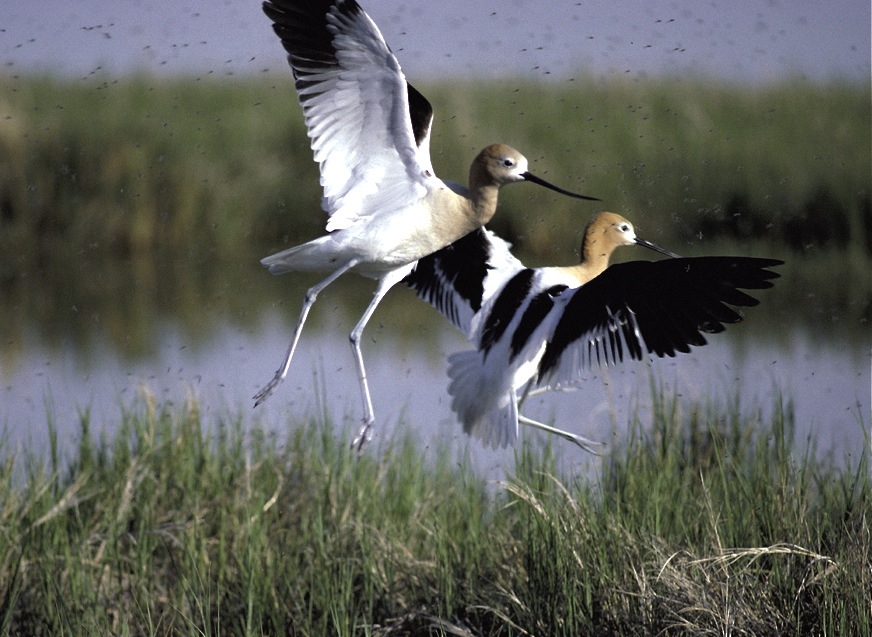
1st American avocets return ...

... to Bear River Migratory Bird refuge in UT, along with white-faced ibis and sandhill cranes.